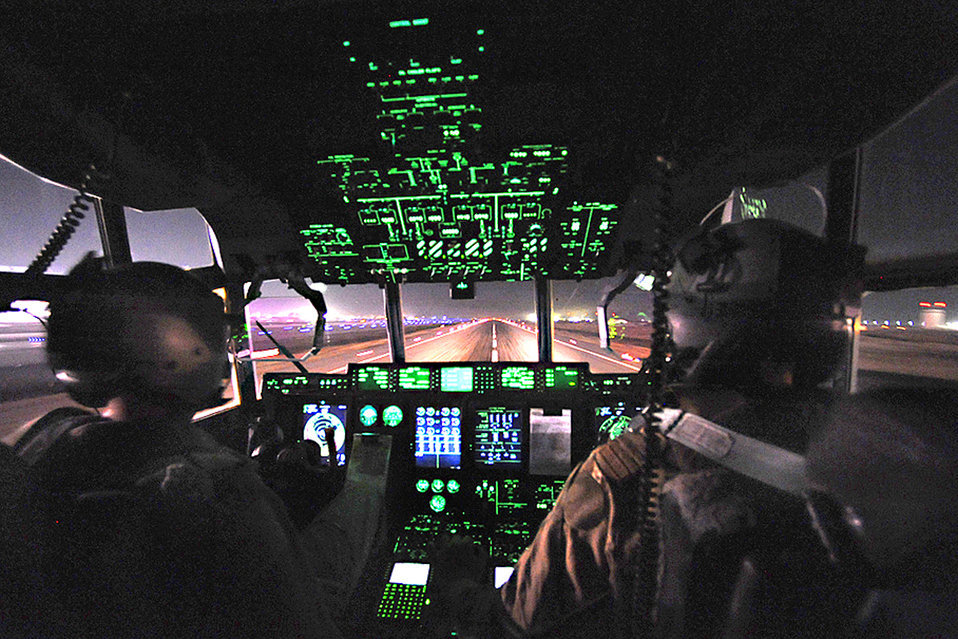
All systems go

Capt. Dave Paland (left) and Canadian air force Capt. Ryan Peters land a C-130J Super Hercules to drop off cargo and passengers during a routine mission at Bagram Airfield, Afghanistan, Jan. 6, 2010. Both pilots are assigned to the 772nd Expeditionary Airlift Squadron.